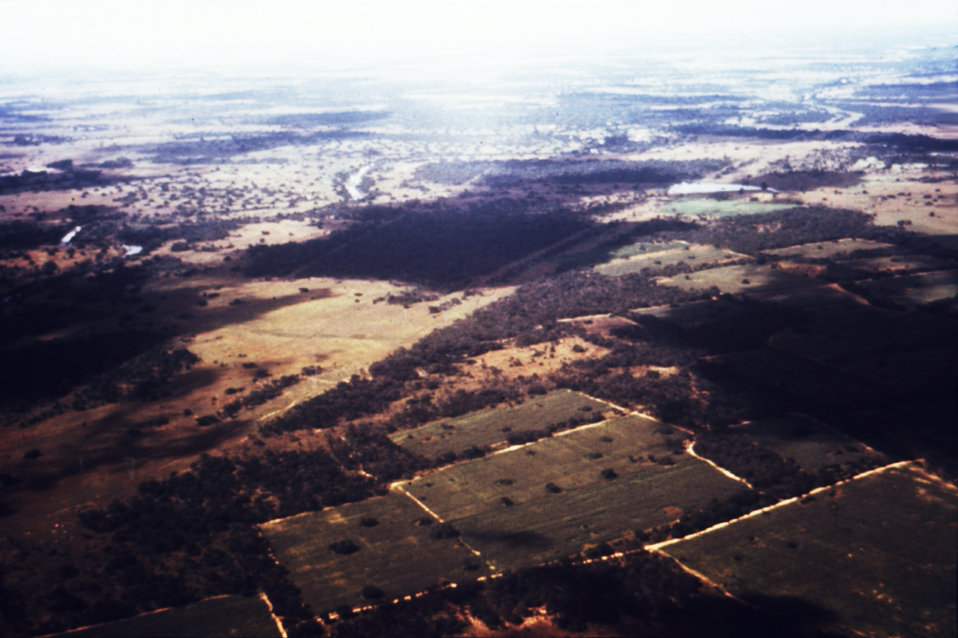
This aerial photo over Rhodesia, now Zimbabwe, was taken by a female traveler who'd later be infected by the Marburg virus.